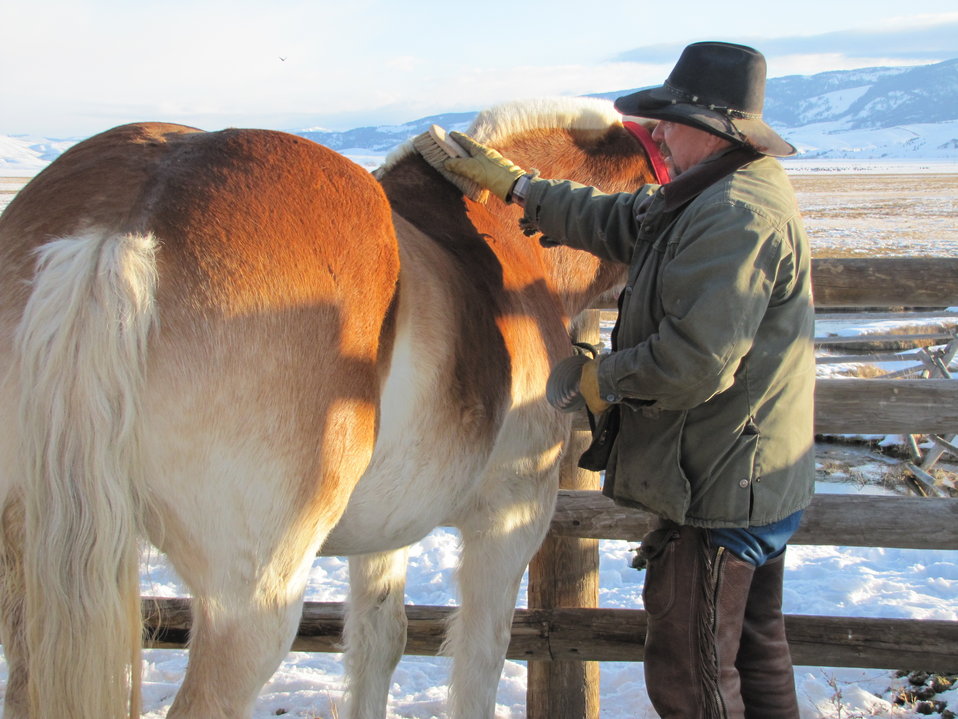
Starting the Morning

Preparations for the daily winter sleigh rides start early. Sleigh drivers arrive first thing in the morning to get the horses ready.